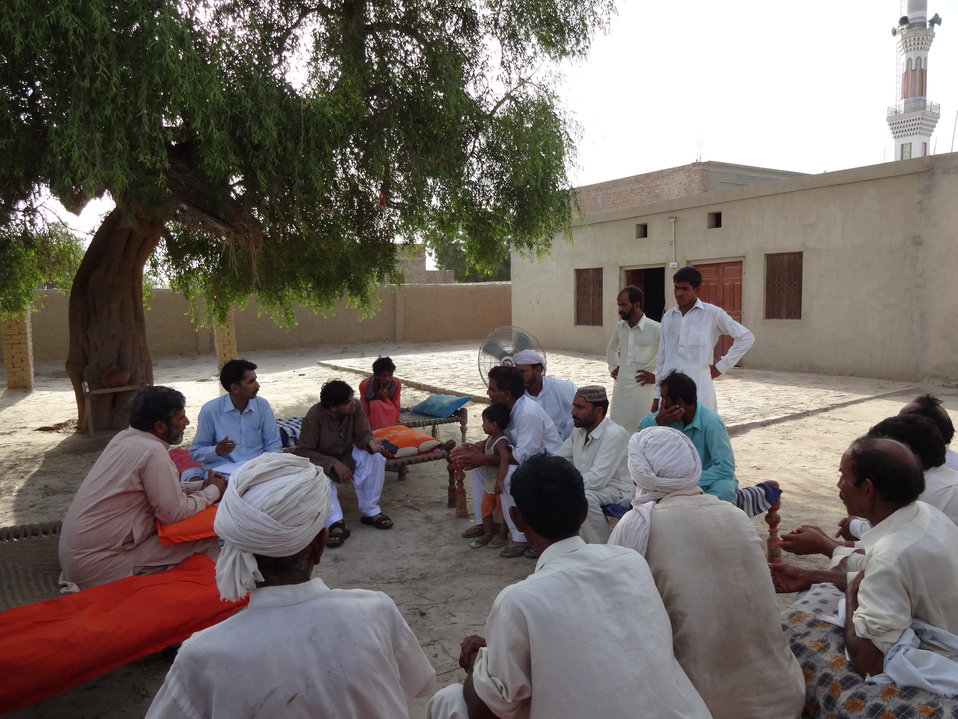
Caption 4 - Damaan - Vehari - Focus Group Discussion

Members of a civil society organization Damaan Development Organization can be seen in a focus group discussion with farmers in the Vehari district, South Punjab. Damaan implemented a project on improving water rights in South Punjab under the Citizens’ Voice Project.